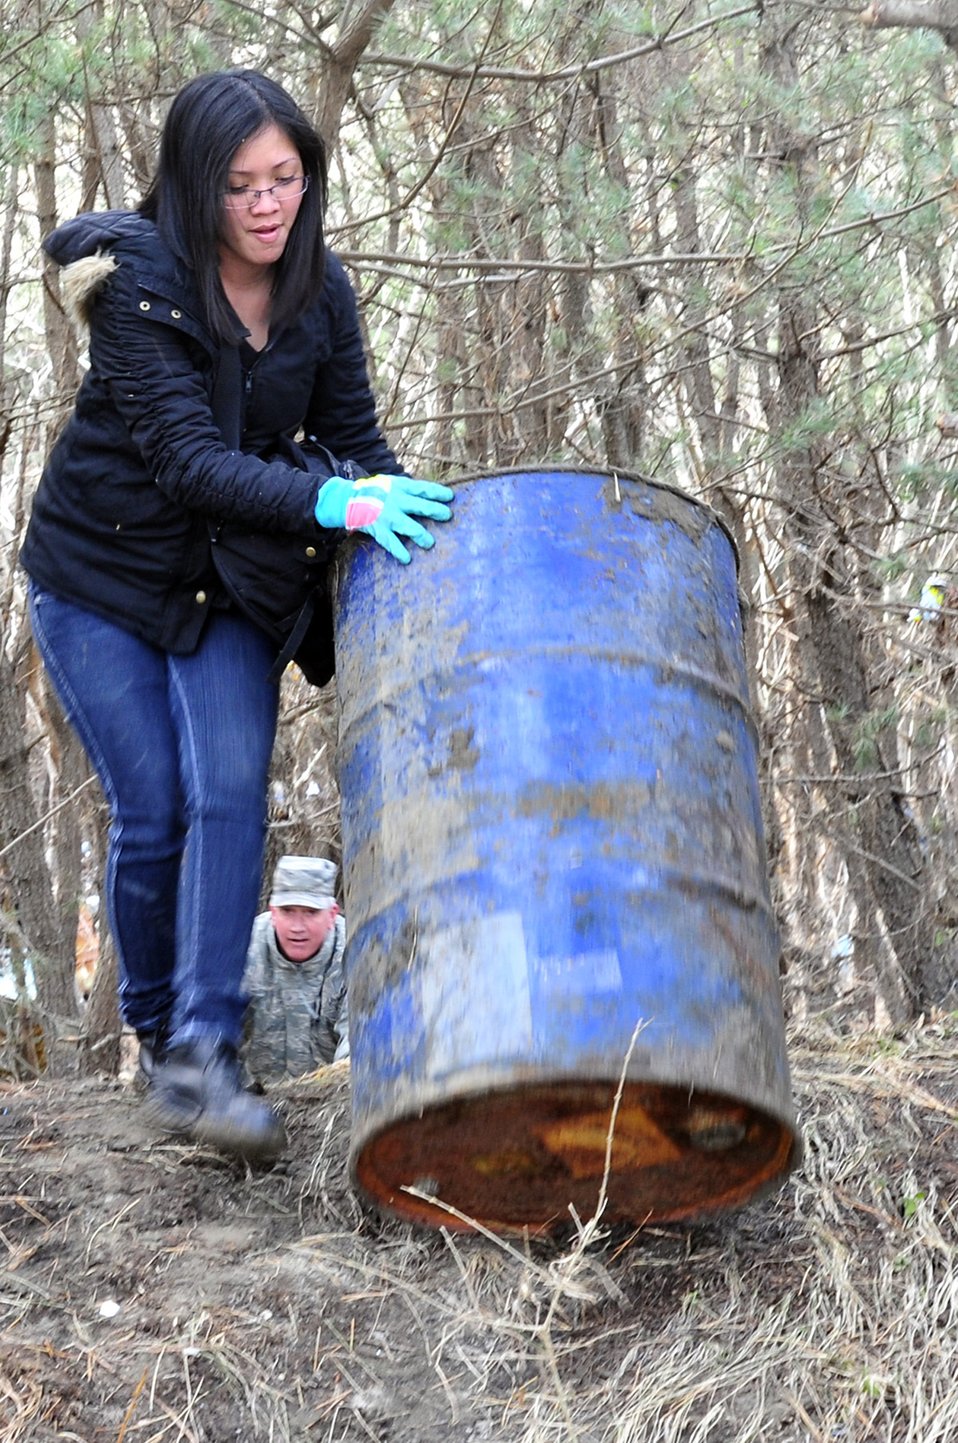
Misawa Air Base coordinates volunteer efforts

MISAWA AIR BASE, Japan -- Amy Casten rolls a barrel out of the tree line while volunteering at the Misawa City fishing port Mar. 19. More than 600 Misawa residents have stepped up to volunteer in the local community after a tsunami washed trash and debris up on the shore Mar. 11.